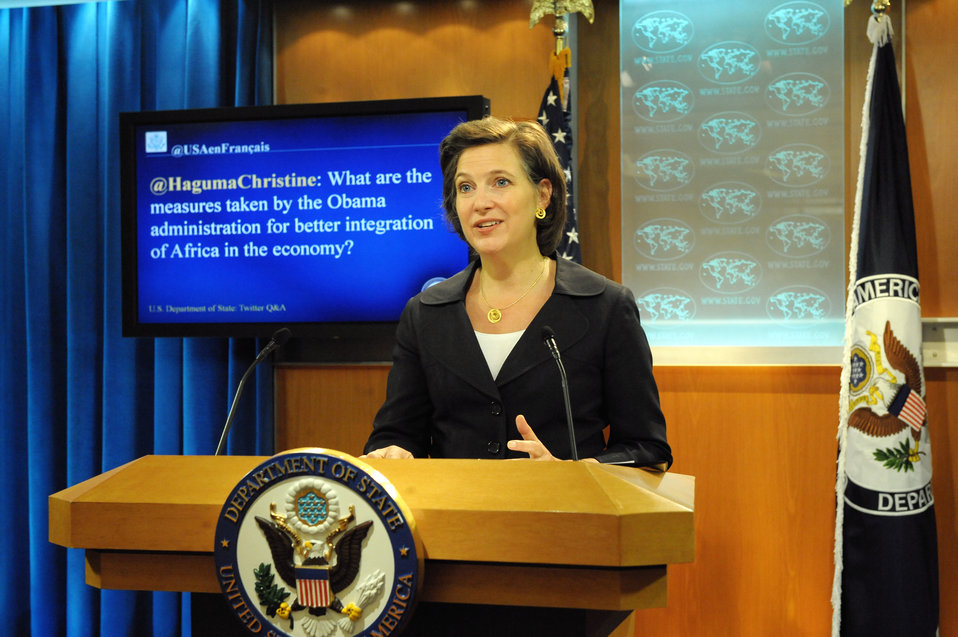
Spokesperson Nuland Responds to a Question from @USAenFrancais

Victoria Nuland, Spokesperson for the U.S. Department of State, answers a question selected from the Department’s official French Twitter feed, @USAenFrancais, on January 27, 2012.